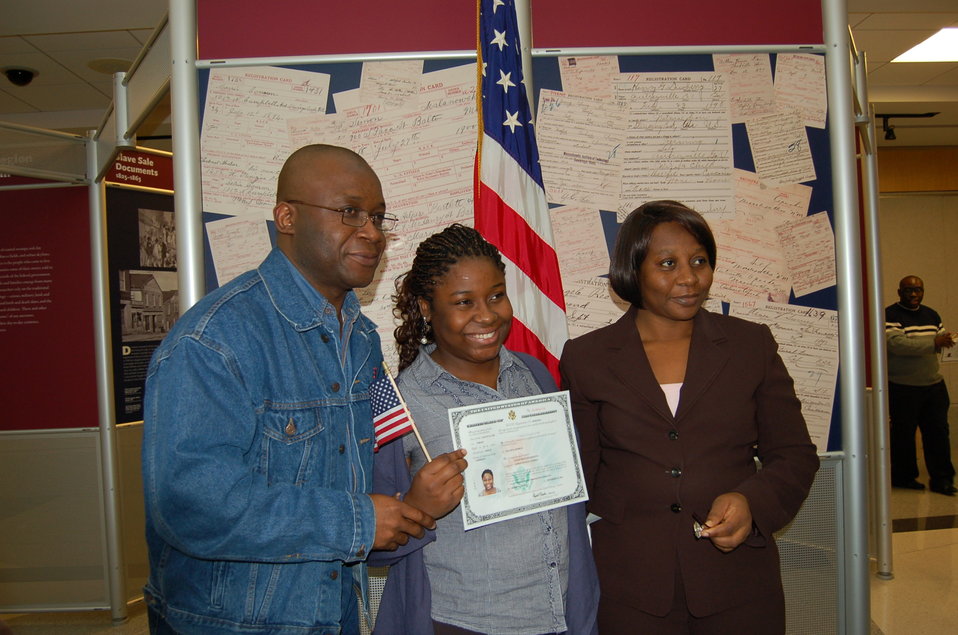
New Citizens